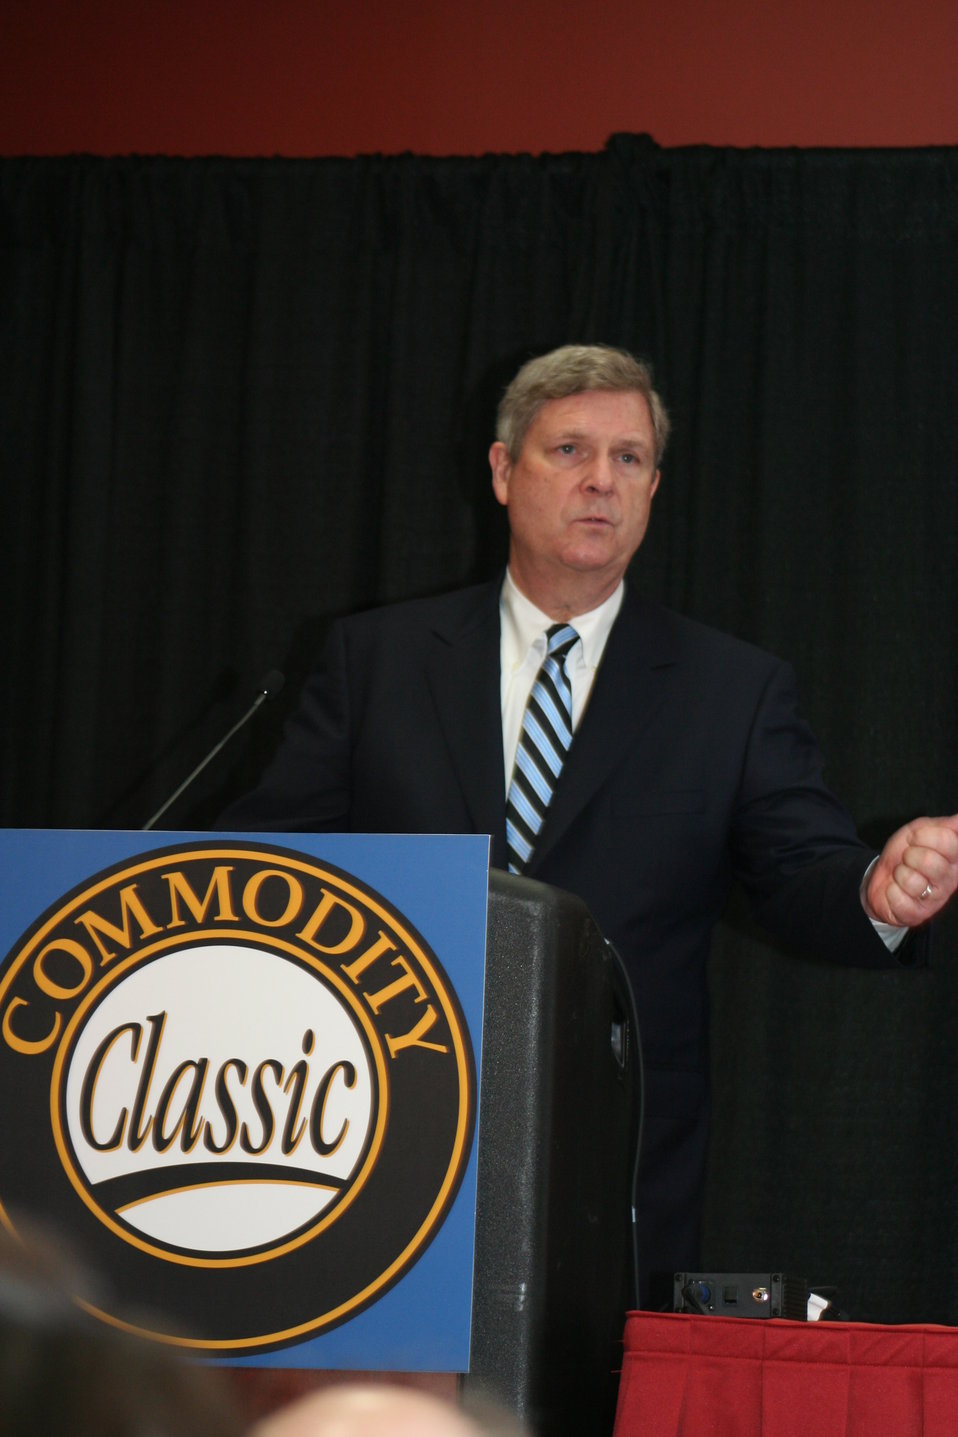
Agriculture Secretary Tom Vilsack discuses the Agricultural Act of 2014 at the Commodity Classic general session in San Antonio, TX on Friday, Feb. 28, 2014. The annual Commodity Classic is open to all corn, soybean, wheat and sorghum growers, member associations, agribusiness, and farm media. It is a farmer-focused and farmer-led convention and trade show.